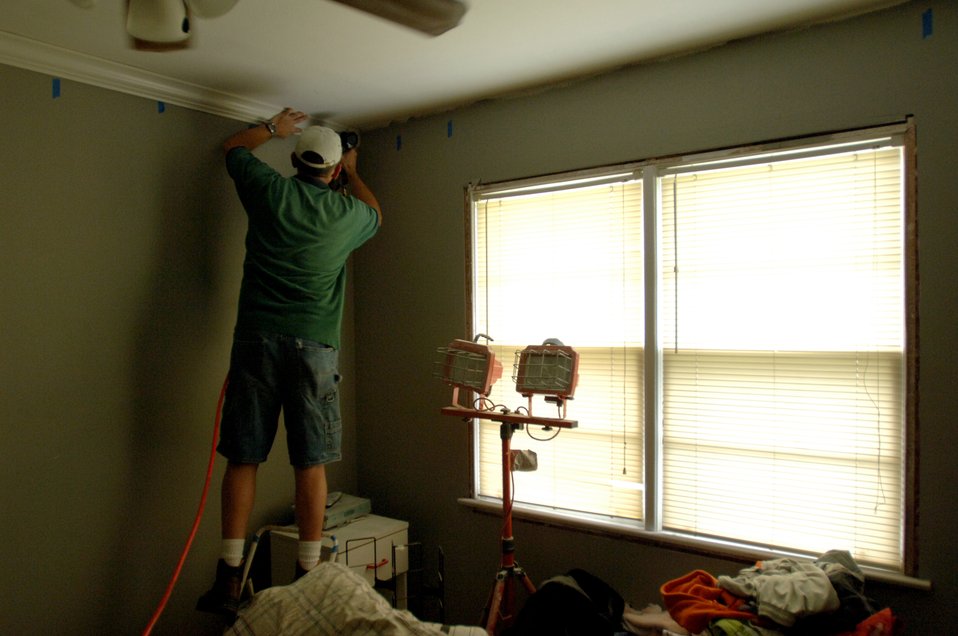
Hurricane hunter deals with aftermath of Katrina

Master Sgt. Daniel Peters installs crown molding in his home in Biloxi, Miss. Sergeant Peters is one of several Airmen whose homes were severely damaged by Hurricane Katrina. Sergeant Peters is assigned to Air Force Reserve Command's 403rd Wing at Keesler Air Force Base, Miss.